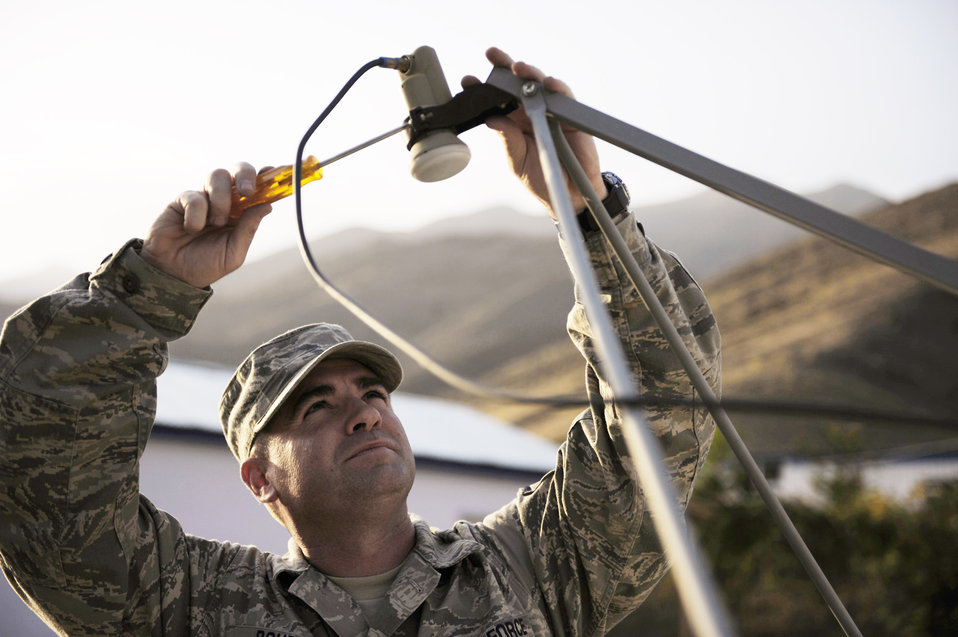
Panjshir PRT proves 'peace, partnership, progress' possible

Master Sgt. Ira Doubet adjusts the Armed Forces Network antenna in preparation for the start of a football game Sept. 11, 2009, near Panjshir, Afghanistan. Sergeant Doubet is the NCO in charge of the command post at the provincial reconstruction team here. He's a Cambridge Springs, Penn., native deployed from Schriever Air Force Base, Colo.